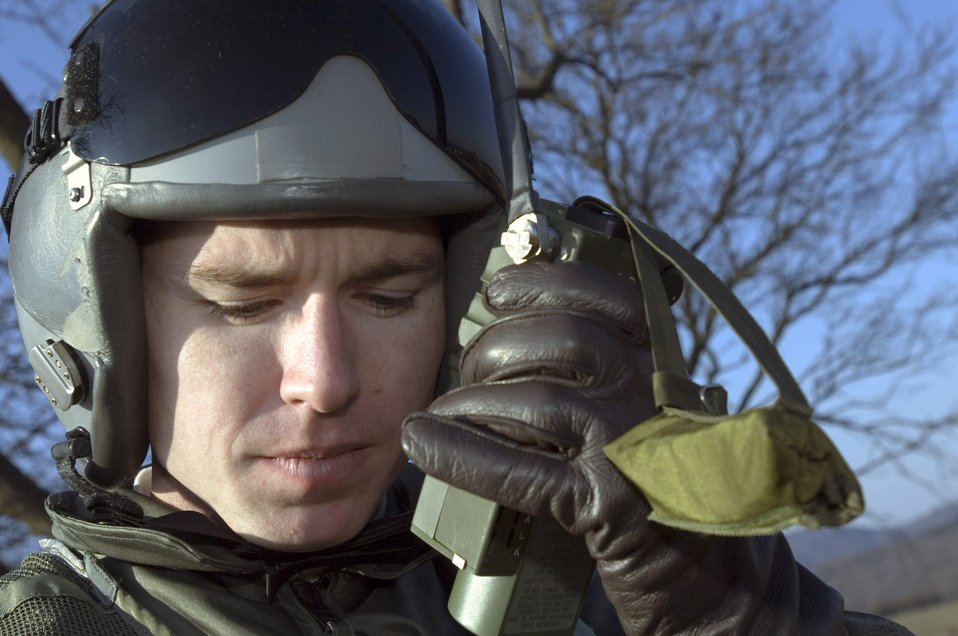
Pilot extraction

Capt. Doug Galloway listens to instructions concerning his extraction by helicopter during combat search and rescue training in Marpingen, Germany, Monday, March 13, 2006. The 81st Fighter Squadron from Spangdahlem Air Base, Germany, and the 56th Rescue Squadron from Naval Air Station, Keflavik, Iceland, are participating in the training here. Captain Galloway is an A-10 fighter pilot from Fort Walton Beach, Fla., with the 81st Fighter Squadron at Spangdahlem Air Base, Germany.